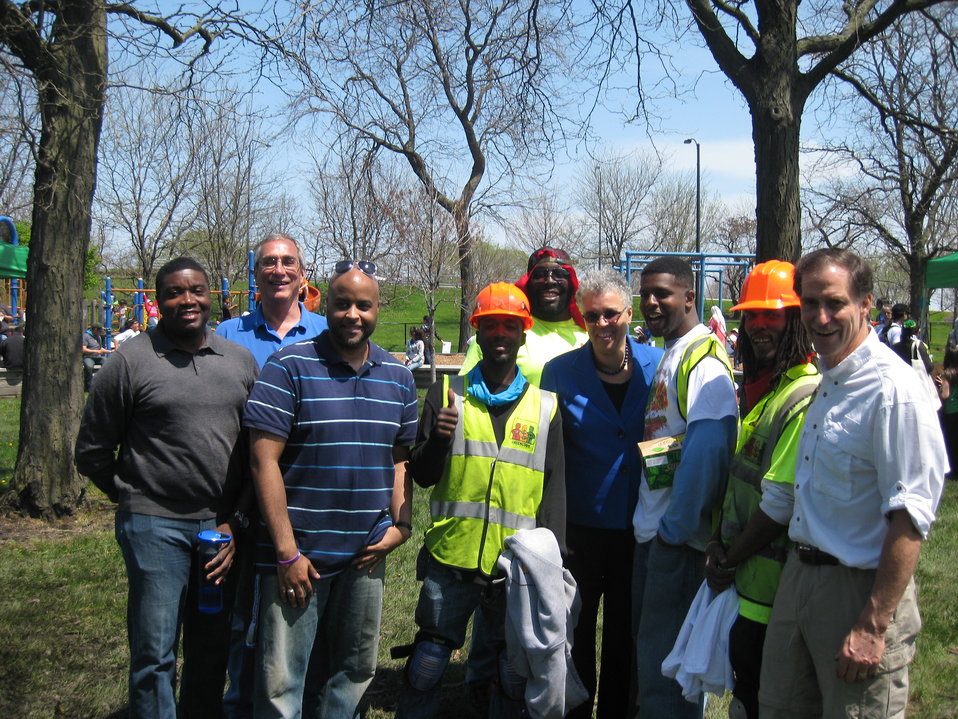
Dan Ashe, Tom Melius and Cook County Board President Toni Preckwinkle meet Greencorps

Chicago Park District Burnham Corridor Community Planting Day
May 10, 2014
Photo by USFWS; Louise Clemency